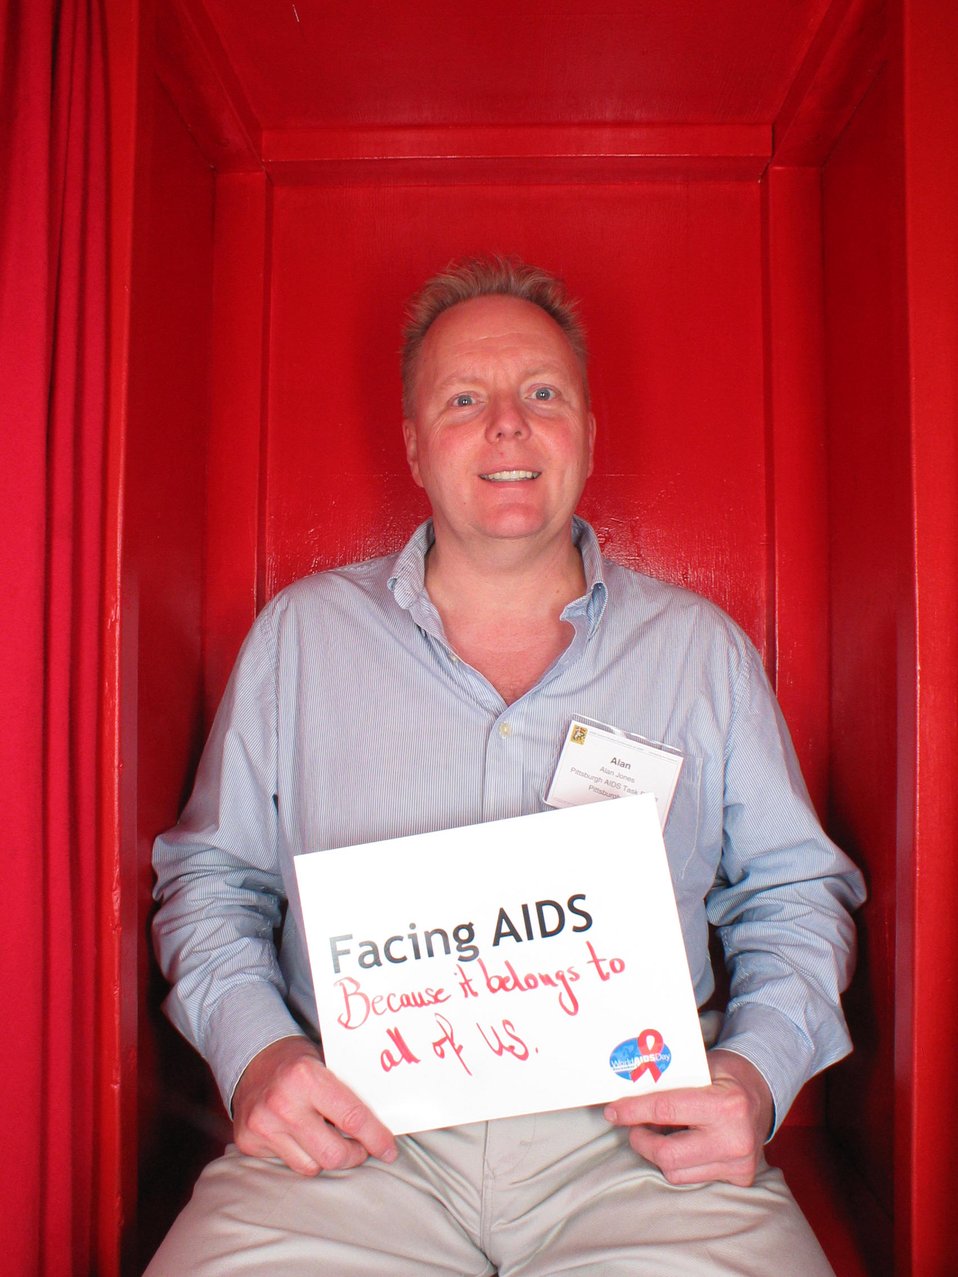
Facing AIDS because it belongs to all of us.